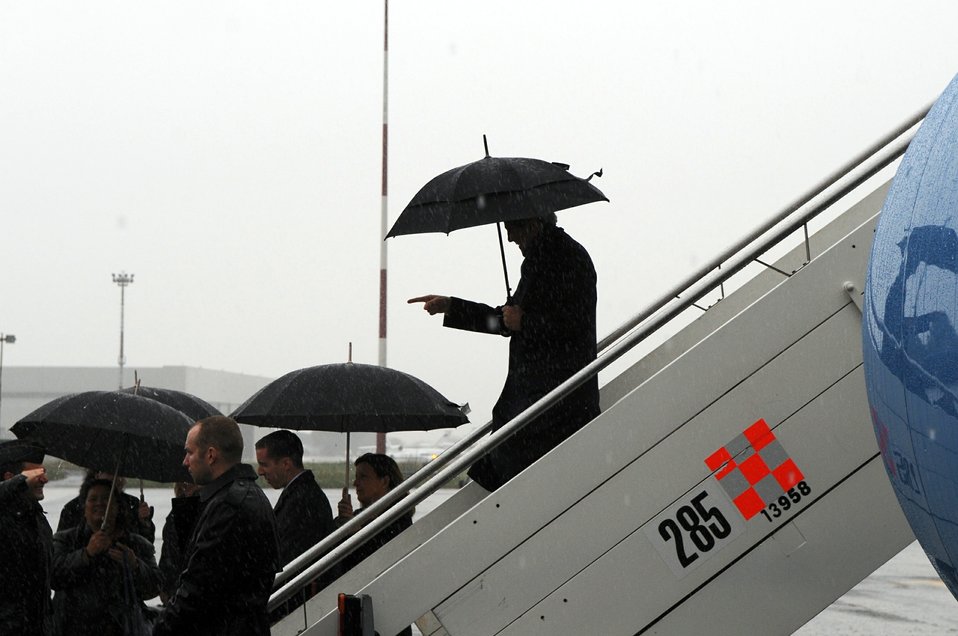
Secretary Kerry Arrives in Rome for Vatican Meeting

U.S. Secretary of State John Kerry points to a military officer saluting him during his rain-soaked arrival in Rome, Italy, for a meeting with Vatican Secretary of State Pietro Parolin on January 14, 2014